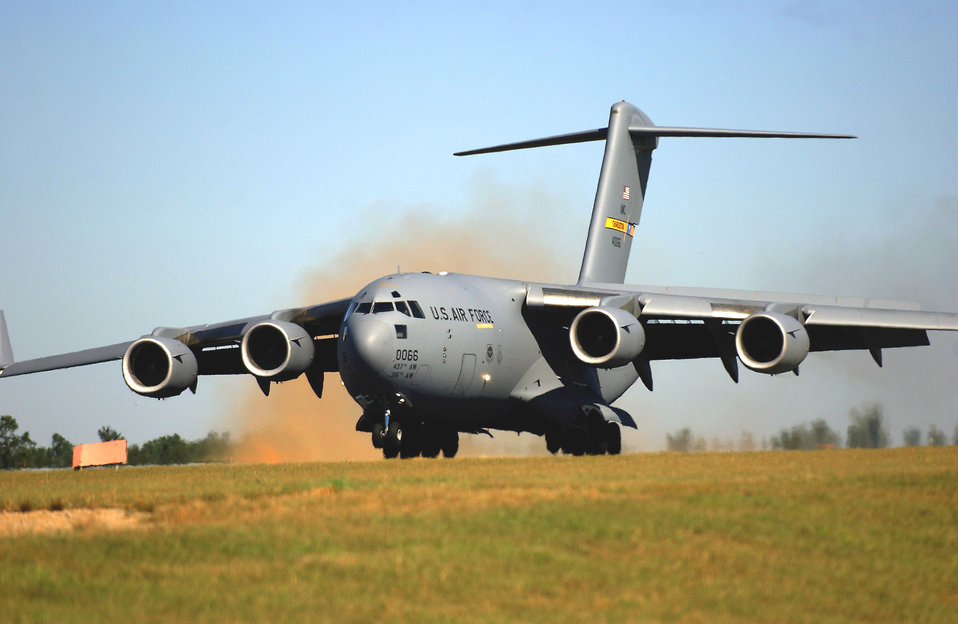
Combat landing

NORTHFIELD AIR BASE, S.C. - A C-17 Globemaster III from the 437th Airlift Wing at Charleston Air Force Base, S.C., performs a combat landing during an incentive flight here recently.